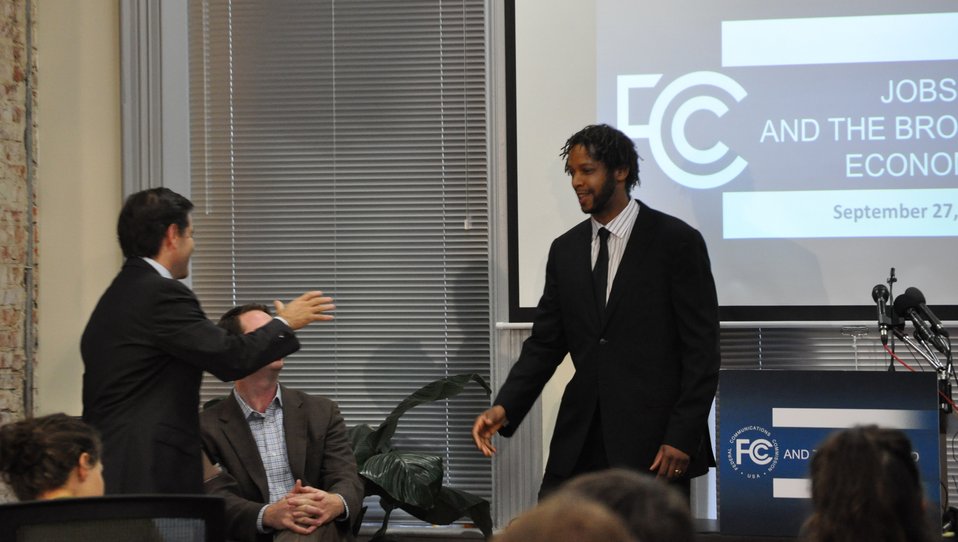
Jobs and the Broadband Economy

FCC Chairman Genachowski meeting Warren Brown, Founder and Owner of CakeLove